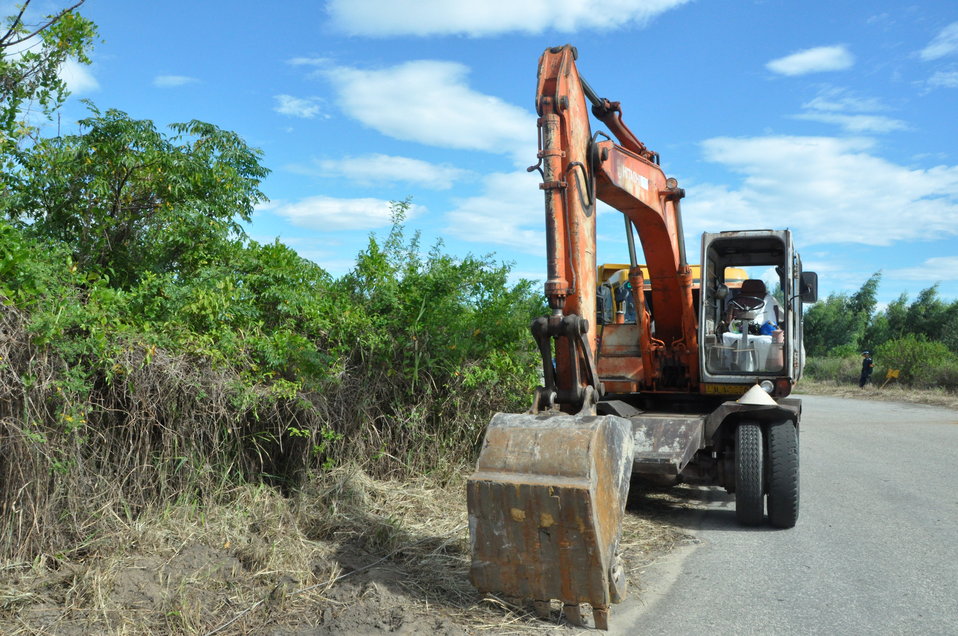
Environmental Remediation of Dioxin Contamination at Danang Airport Project Launch

August 9, 2012